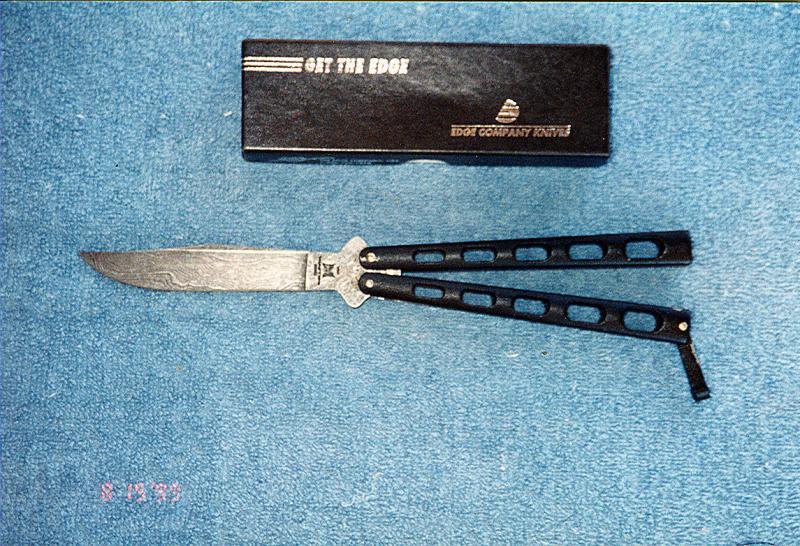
Typical low-cost Balisong with zamak handles.